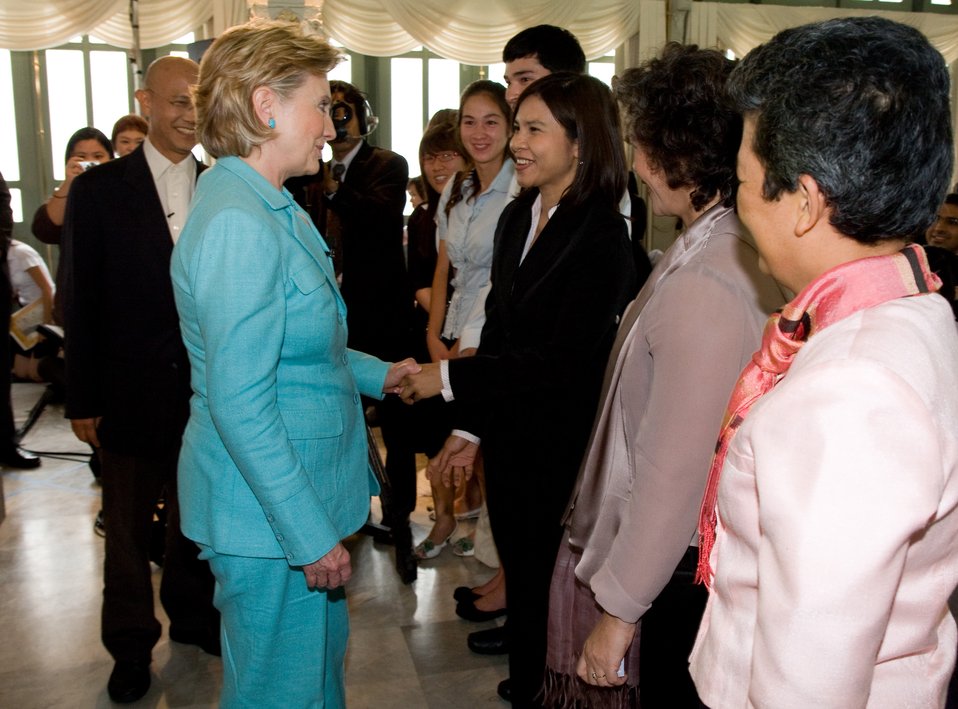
Secretary Clinton Interviews With the Nation Group

U.S. Secretary of State Hillary Rodham Clinton is greeted by media rights advocate Supinya Klangnarong after an interview Phyathai Palace in Bangkok, Thailand July 22, 2009.